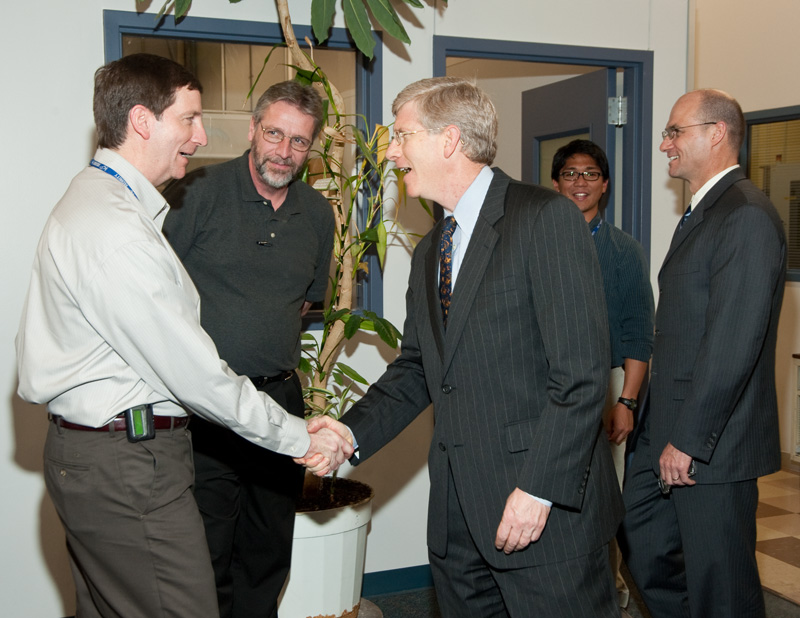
Deputy Secretary Daniel Poneman meets KCP employees.